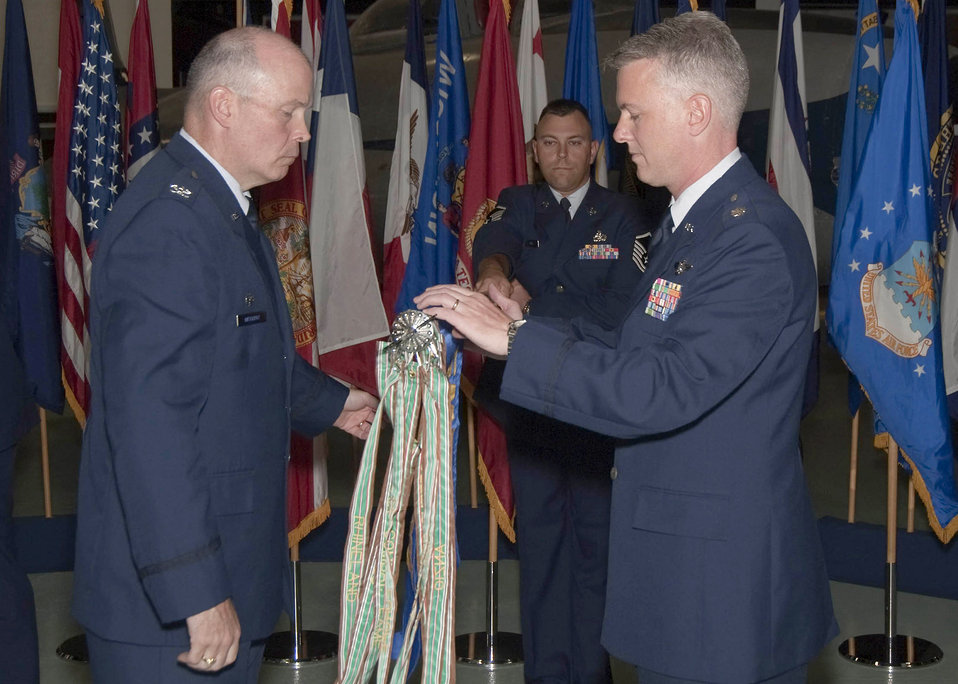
Joint F-35 squadron stands up

Col. Kevin McElroy (left),and Lt. Col. Tim Welde, unfurl the 513th Electronic Warfare Squadron flag at the activation ceremony April 23, 2010, at Eglin Air Force Base, Fla. Colonel McElroy is the 53rd Electronic Warfare Group commander. Colonel Welde is the new commander of the 513th Electronic Warfare Squadron.